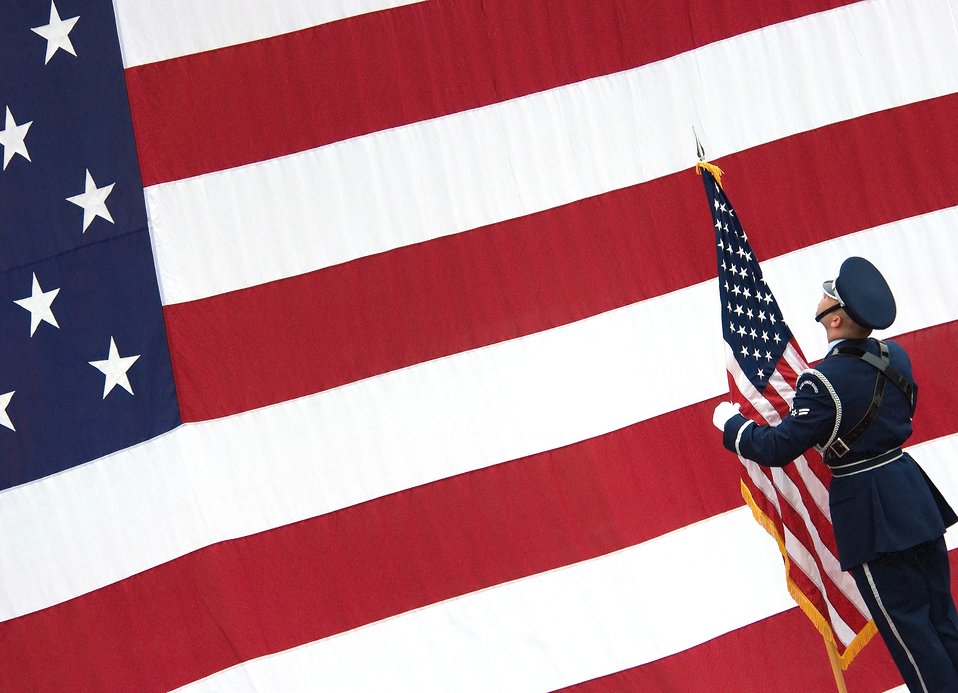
Stars and Stripes

Airman 1st Class Nikolaos Pitas posts the American flag during a change of command ceremony at Dover Air Force Base, Del., on Friday, June 2. He is assigned to the 436th Maintenance Squadron.